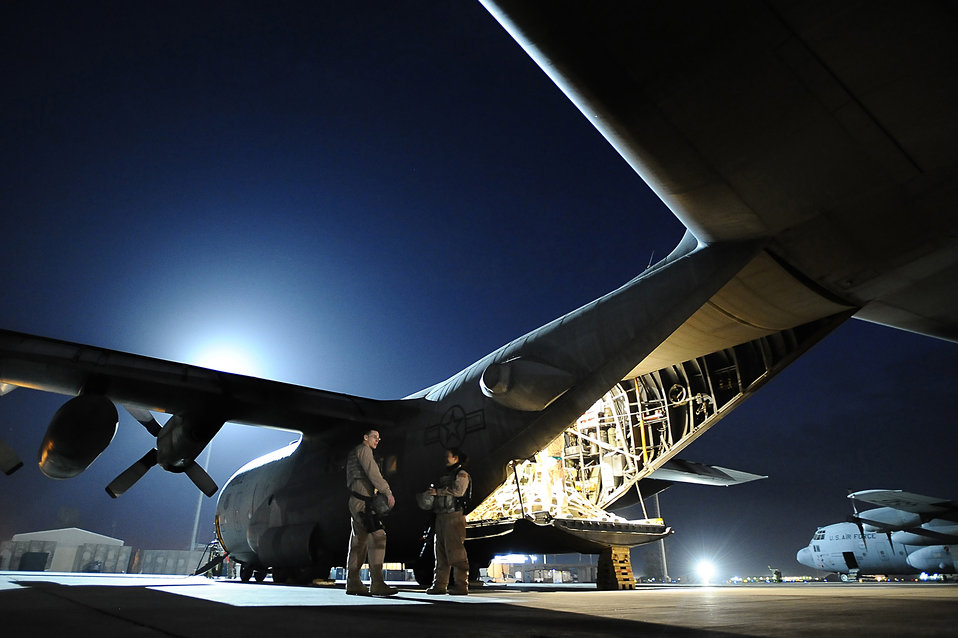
I'll fly away

Senior Airmen Matthew Rinehart and Rosie Munoz stand outside of a C-130 Hercules Dec. 31, 2008, at Joint Base Balad, Iraq. The Airmen serve as the aircraft's Fly Away Security Team and provide ground security for the aircraft as it loads and unloads cargo at unsecured airfields. Airmen Rinehart and Munoz are deployed to the 332nd Expeditionary Security Forces Squadron from Andrews Air Force Base, Md. Airman Rinehart's hometown is York, Pa. Airman Munoz is from El Paso, Texas.